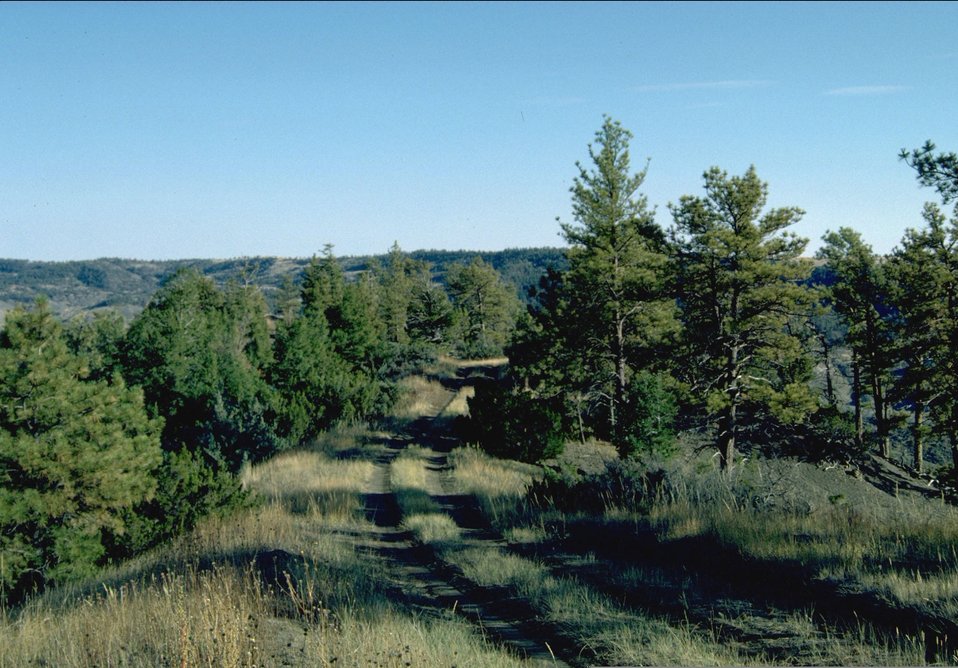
Missouri Breaks--Upper Missouri River Breaks National Monument